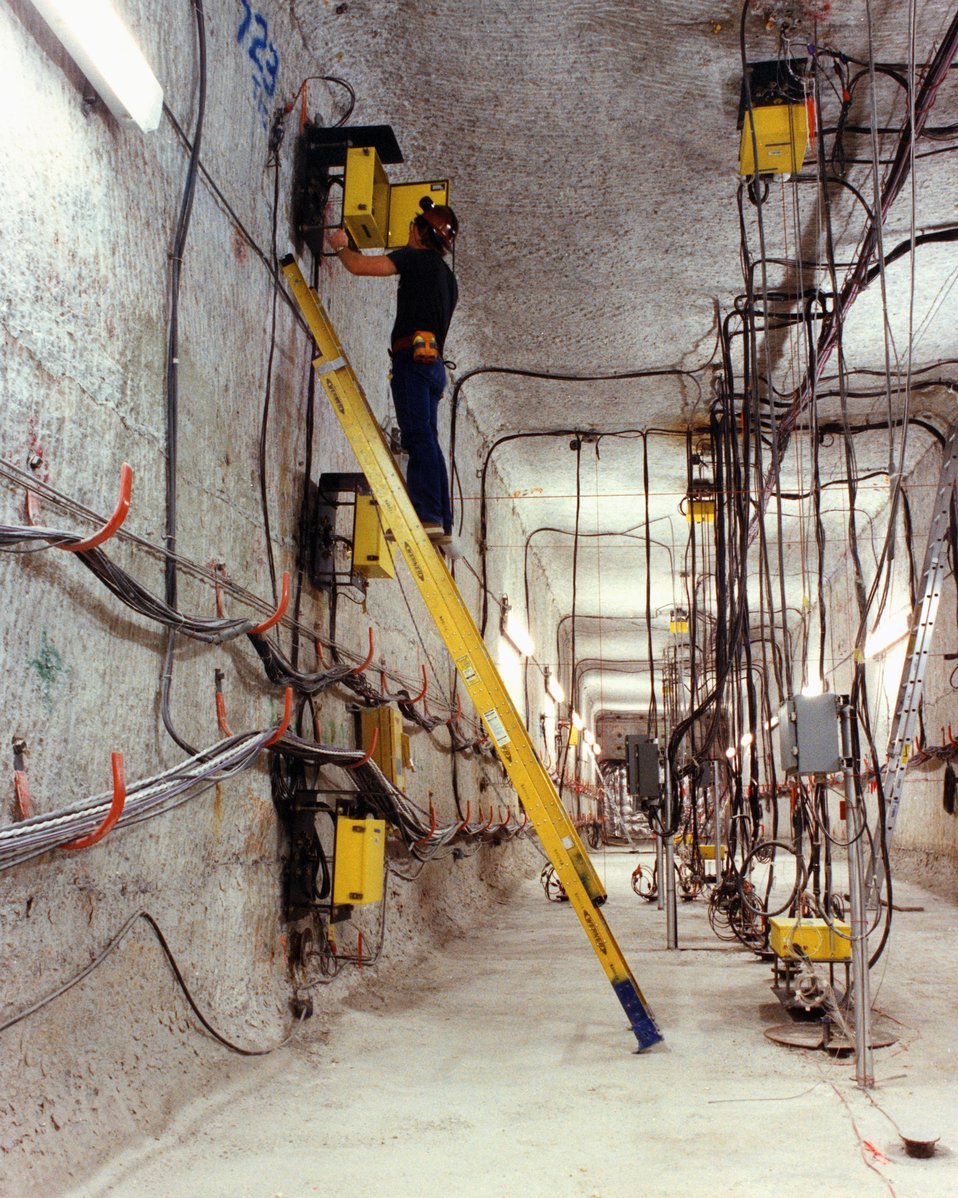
EXTENSOMETER BOX INSTALLATION FOR THERMAL/STRUCTURAL INTERACTION TEST.

THE WASTE ISOLATION PILOT PLANT IS A DOE RESEARCH AND DEVELOPMENT FACILITY FOR DEMONSTRATING THE SAFE DISPOSAL OF TRANSURANIC RADIOACTIVE WASTES. TEST SHAFTS HAVE BEEN DRILLED TO A DEPTH OF 2,100 FEET. THE SHAFTS, ONE 6 FEET IN DIAMETER AND THE OTHER 12 FEET IN DIAMETER, PROVIDE AN ENTRY PASSAGE AND VENTILATION TO THE UNDERGROUND SALT ROCK FORMATION THAT IS BEING TESTED TO DETERMINE ITS SUITABILITY FOR RADIOACTIVE WASTE STORAGE.